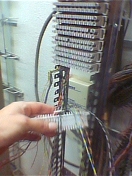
Italiano: Esempio di collegamento di un blocco di permutazione: Foto di una centrale telefonica. Autore:Simulaselva Esecutore:Simulaselva